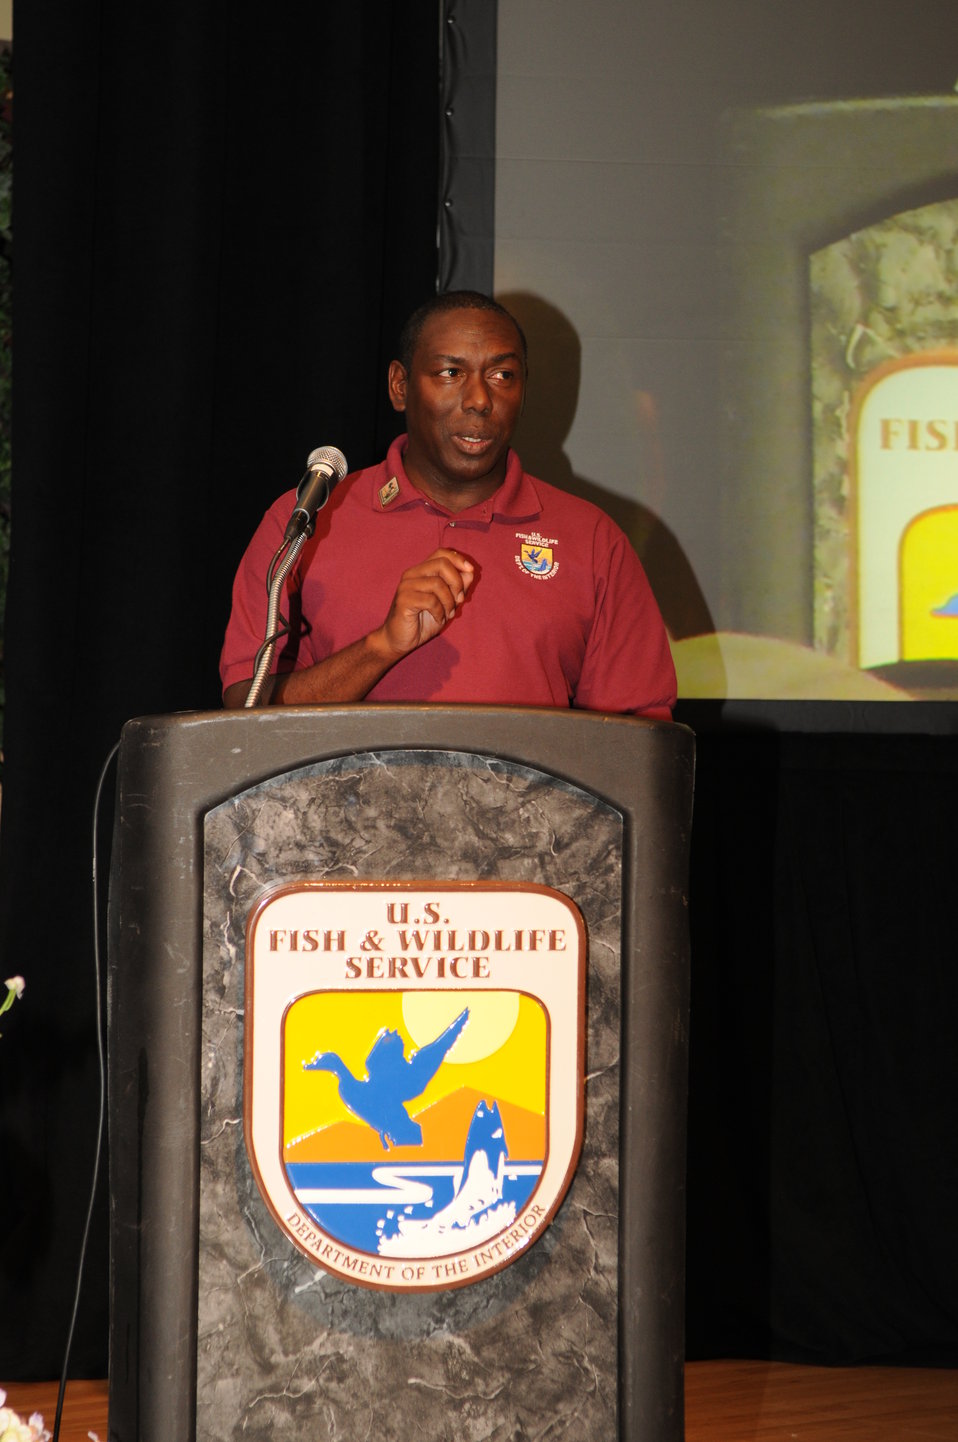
Opening Remarks

The U.S. Fish & Wildlife Service sponsored the 2012 Federal Duck Stamp Art Contest September 28 and 29 in Ogden, Utah, at Weber State University. A panel of five judges was responsible for choosing the art work used to design the 2013-2014 Migratory Bird Hunting and Conservation Stamp.